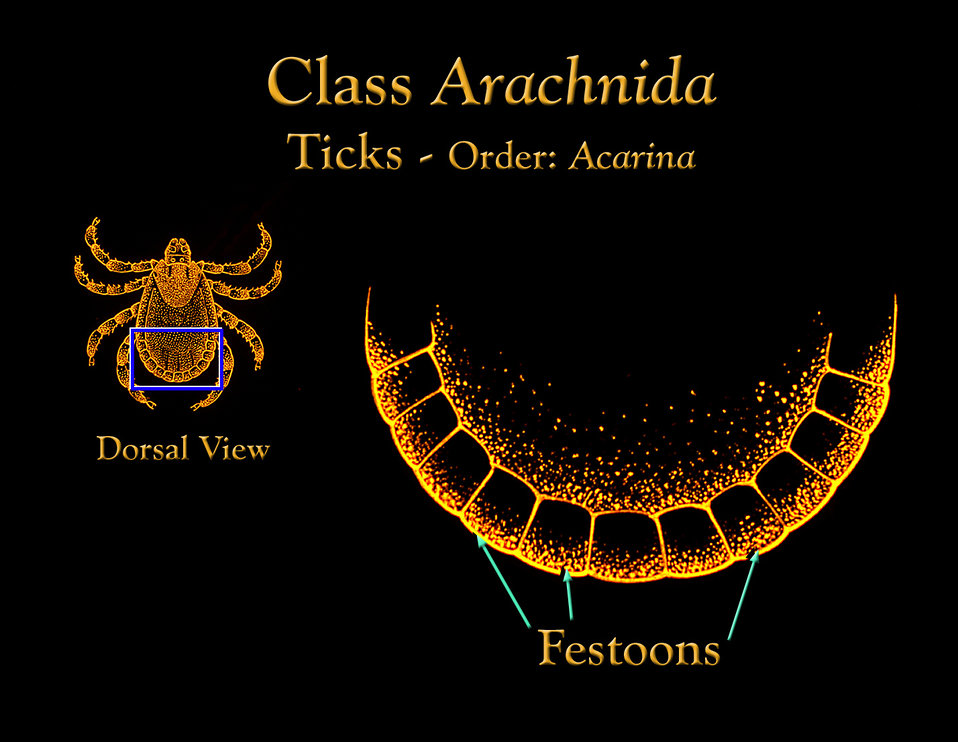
This drawing depicts the anatomic location of the 'festoons' that adorn the posterior abdominal ventral margin of many ticks.